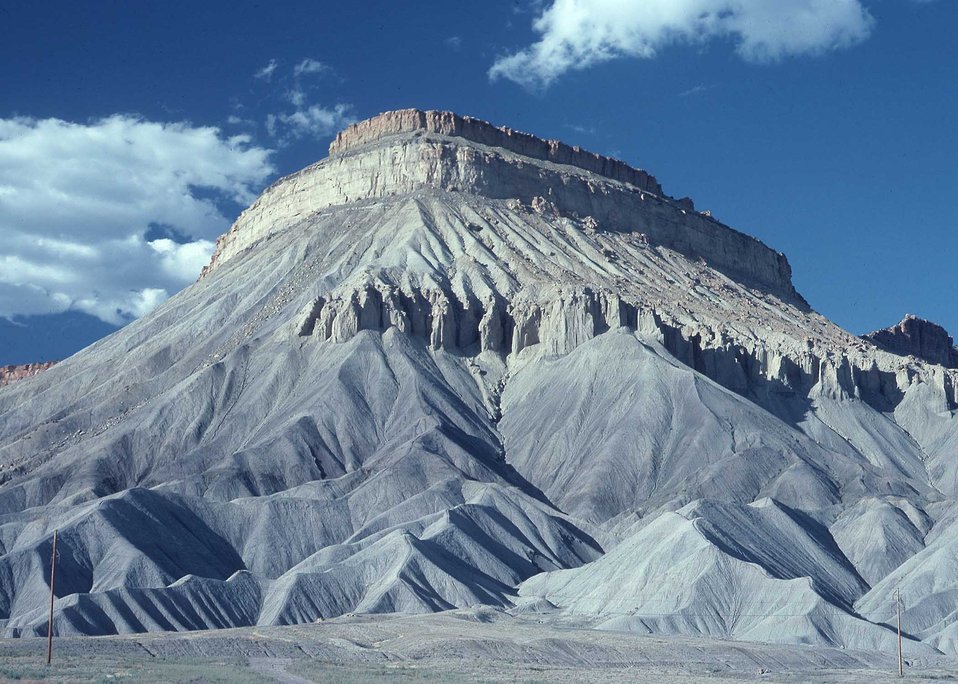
Mancos shale is eroded by the forces of wind and water.